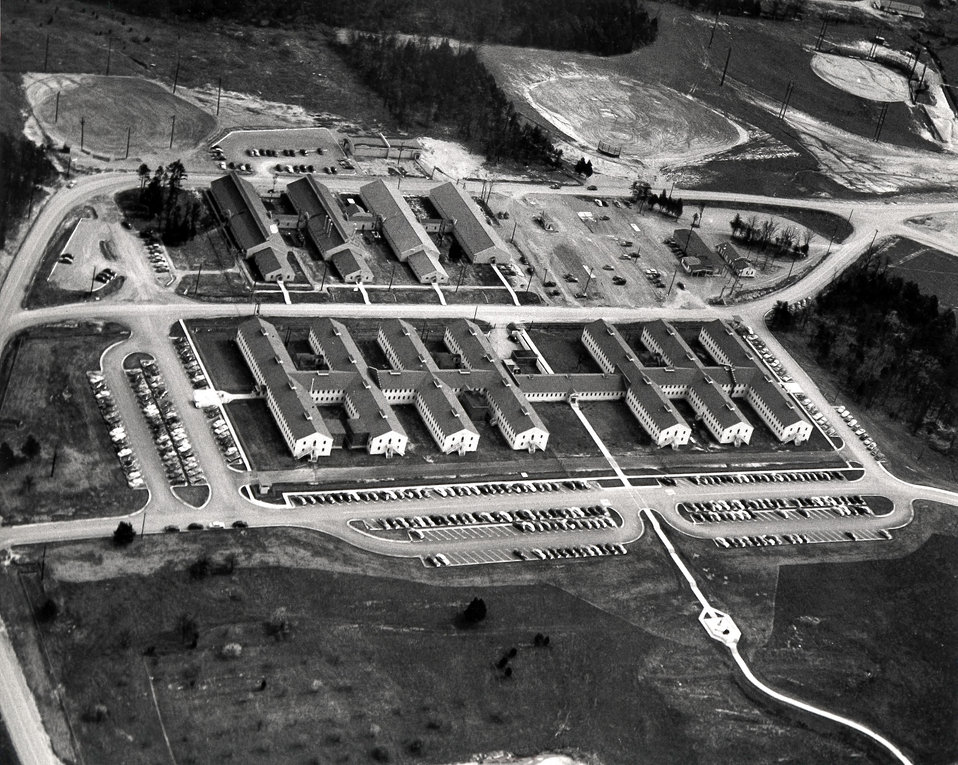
Air View AEC Adm. Bldg. Oak Ridge

6335 DOE photo Ed Westcott 4/1950 Oak Ridge Tennesee